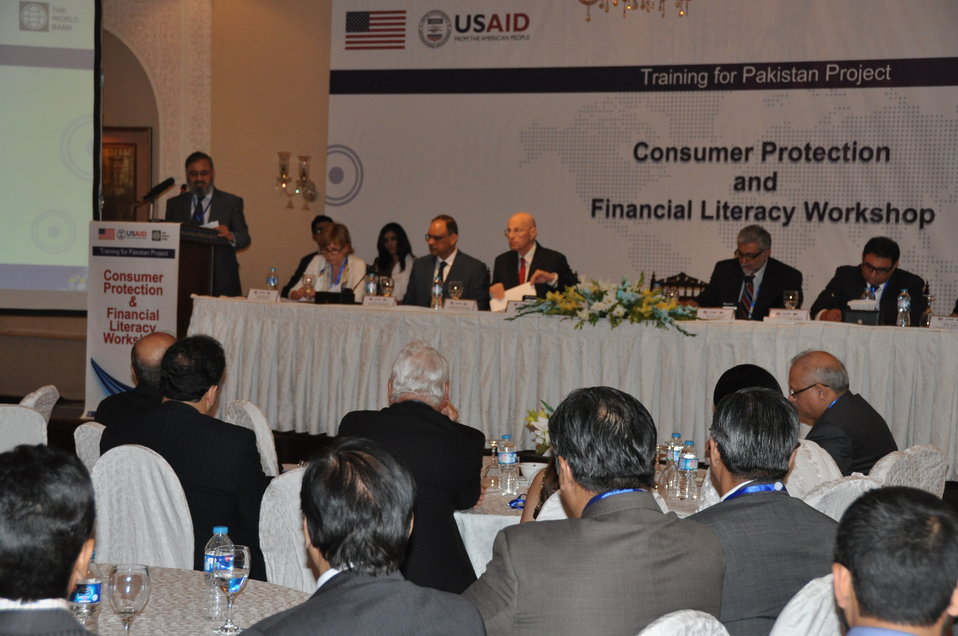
Consumer Protection and Financial Literacy workshop 02

USAID supported study to build public confidence in financial institutions; encourage savings and long-term investments